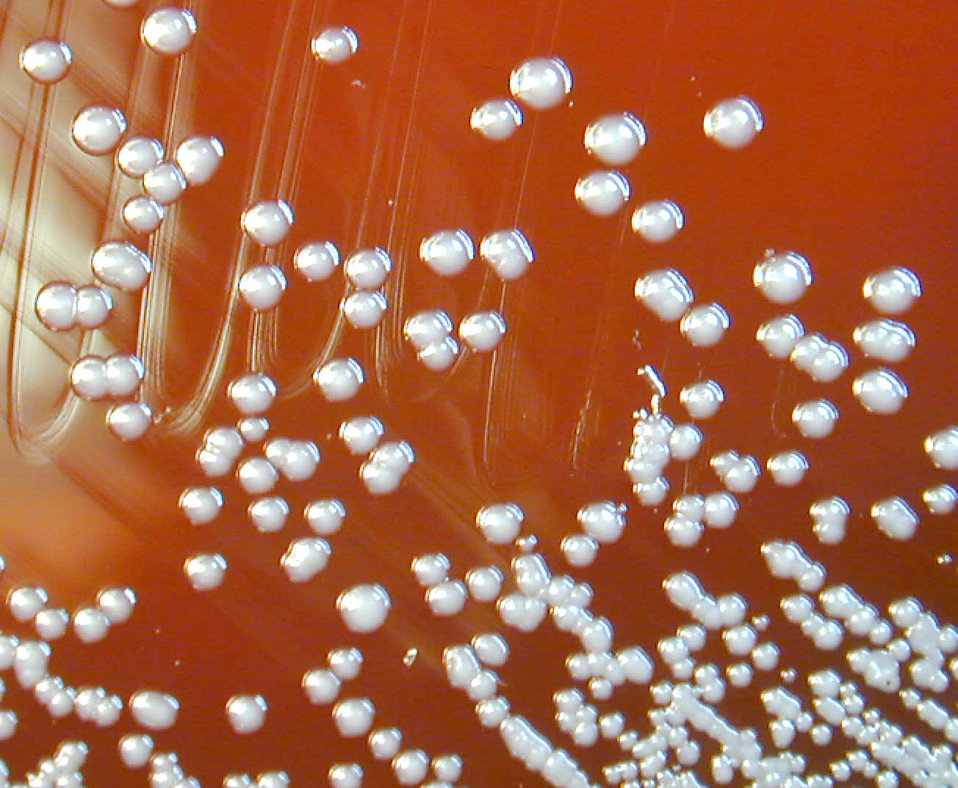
Burkholderia pseudomallei grown on sheep blood agar for 48 hours.